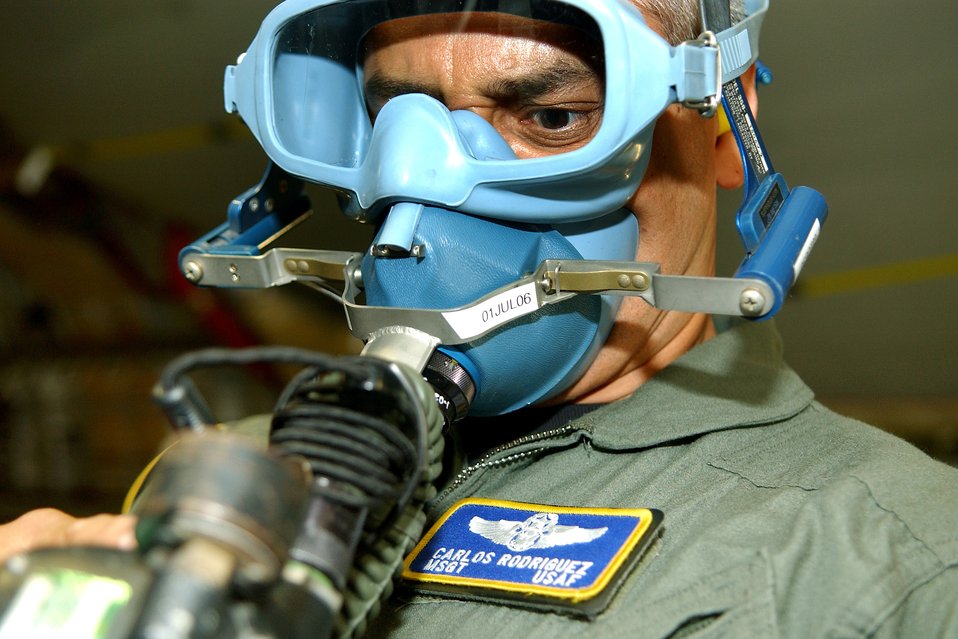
Airmen, Soldiers polish skills at Golden Medic

Master Sgt. Carlos Rodriguez tests his oxygen mask aboard a C-17 Globemaster III during Golden Medic 2006 on Saturday, June 17, 2006. The annual medical exercise involves medical servicemembers from various military branches, including the Air Force and Army this year. Sergeant Rodriguez is assigned to the 315th Aeromedical Evacuation Squadron at Robins Air Force Base, Ga.